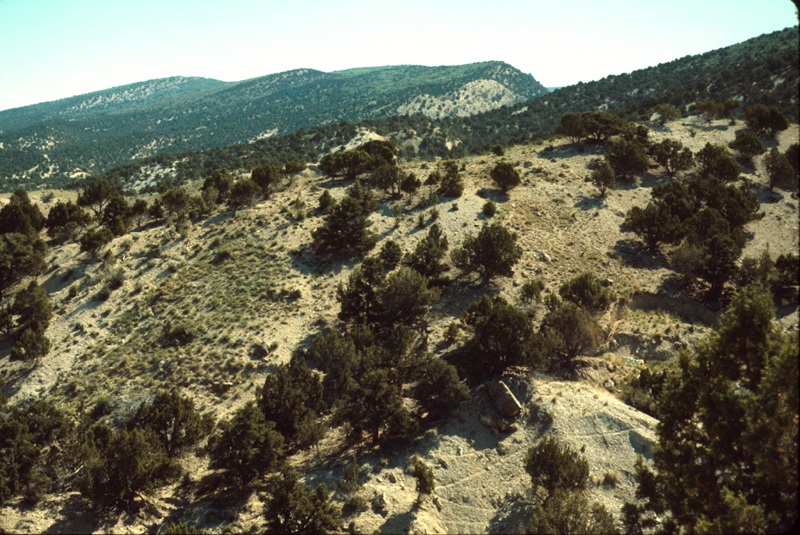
LSRD Range Restoration Project Lower Snake River District